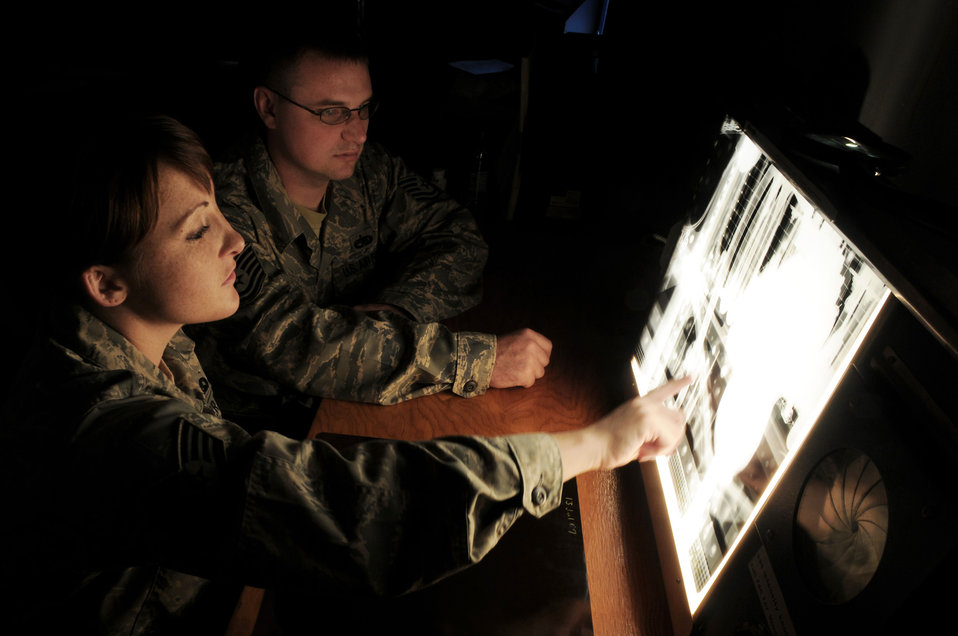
Airmen destroy nothing to sustain mission

Staff Sgt. Cortney Coker looks over an X-ray image of a section of F-15E Strike Eagle with Tech. Sgt. Sterling Rosenau July 17 at Royal Air Force Lakenheath, England. X-rays of the aircraft are taken before and after inspections and then compared for variations or defects. Sergeant Coker is a 48th Equipment Maintenance Squadron nondestruction inspection journeyman, and Sergeant Rosenau is a 48th EMXS F-15E crew chief.